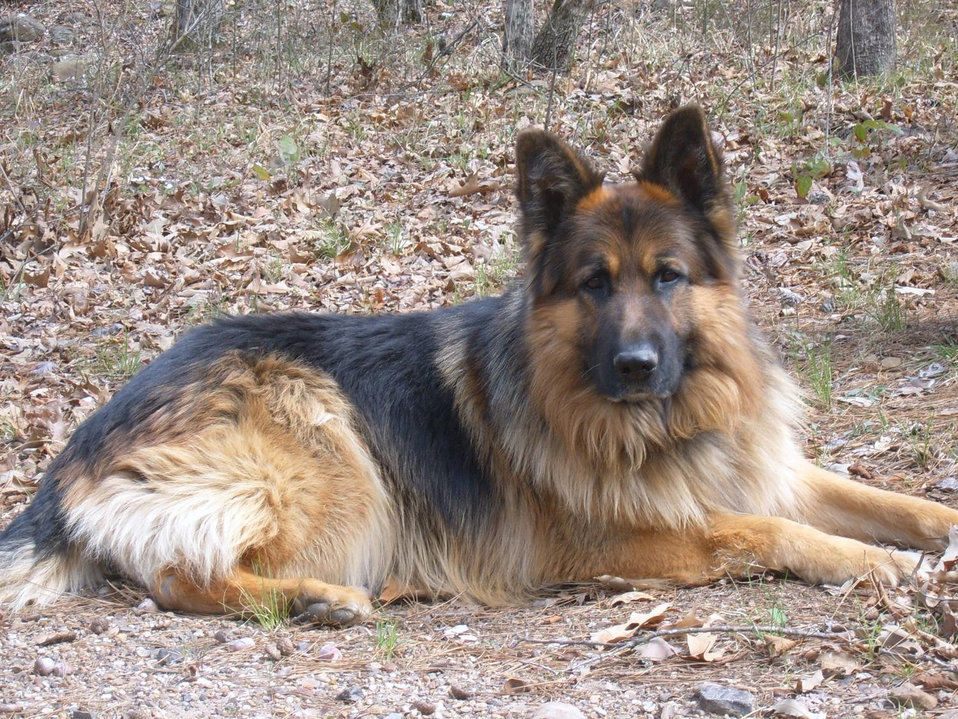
K9 1

Kevlar, a 13-year-old German Shepherd, served on a K-9 unit with Shasta-Trinity National Forest patrol captain Chad Krogstad for 8 ½ years before retiring in 2010. Kevlar became Krogstad’s pet after the agency retired the dog.